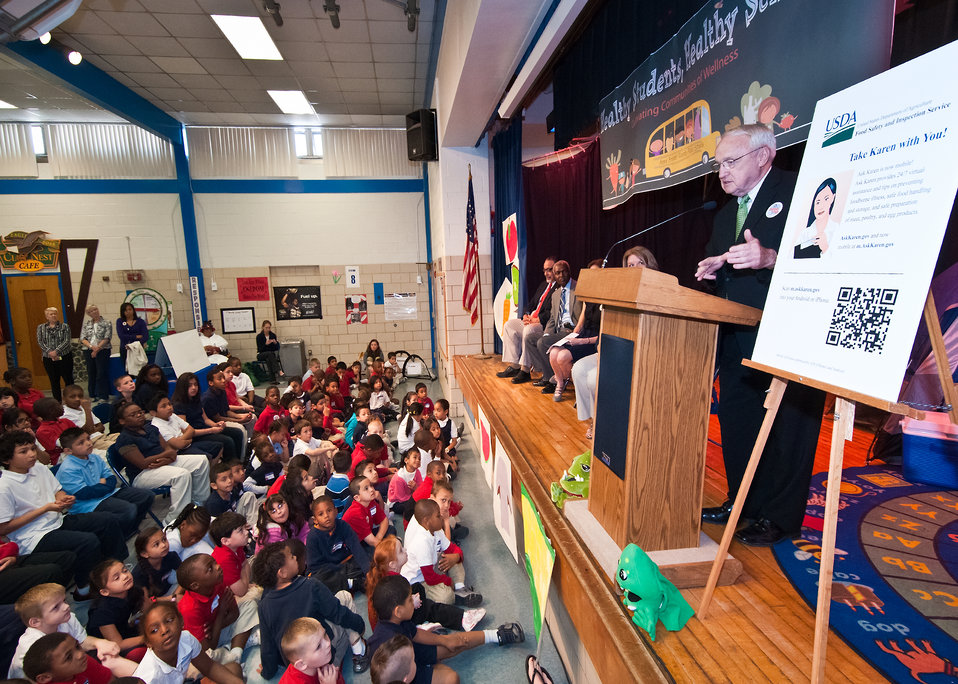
Dr. Kevin Concannon, Undersecretary, Food Consumer and Nutrition Services explains the importance of good nutrition and exercise to students at Maryland City Elementary School in Laurel, MD, during a United States Department of Agriculture, Food Safety Inspection Service, Food Safety Education Camp on Thursday, May 5, 2011.